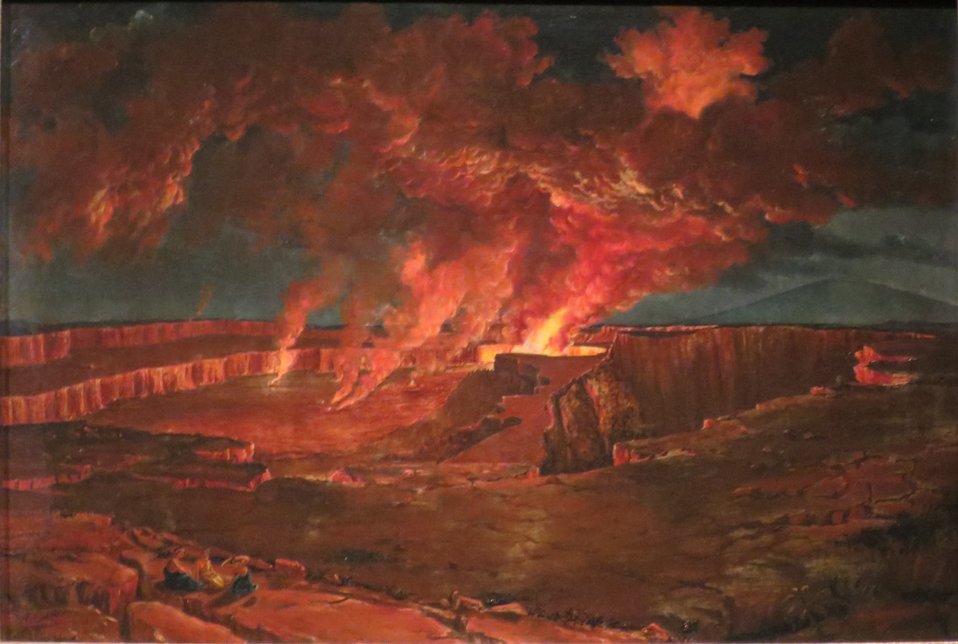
'Kilauea by Night', oil on canvas painting by Titian Ramsay Peale, 1842